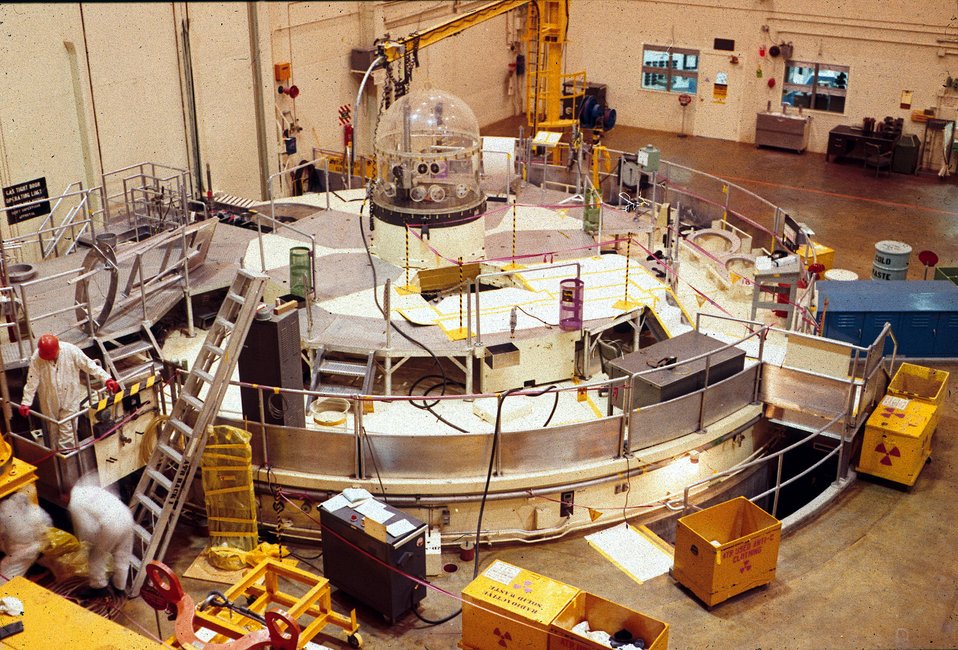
ADVANCED TEST REACTOR - REACTOR VESSEL.
THE ADVANCED TEST REACTOR (ATR) IS A LARGE REACTOR WITH AN OPERATING THERMAL POWER LEVEL OF 250,000 KILOWATTS. THE ATRIS A LIGHT-WATER-MODERATED AND -COOLED REACTOR. IT EMPLOYS A NEUTRON FLUX CONCENTRATION PRINCIPLE (FLUX TRAPS) TO ACHIEVE VERY HIGH FLUX LEVELS IN ITS TEST SPACES WITHOUT EXCESSIVE POWER DENSITIES IN ITS FUEL ELEMENTS. THE AD- VANCED DESIGN CONCEPT USED IN THE ATR HAS CONTRIBUTED SUB- STANTIALLY TO REACTOR TECHNOLOGY AND DEVELOPMENT. OTHER DESIGN FEATURES HAVE PROVIDED SIGNIFICANT IMPROVEMENTS IN THE UNIFORMITY AND STABILITY OF THE NEUTRON FLUX AND IN THE OPERATION AND SERVICING OF THE REACTOR AND ITS EXPERIMENTS.